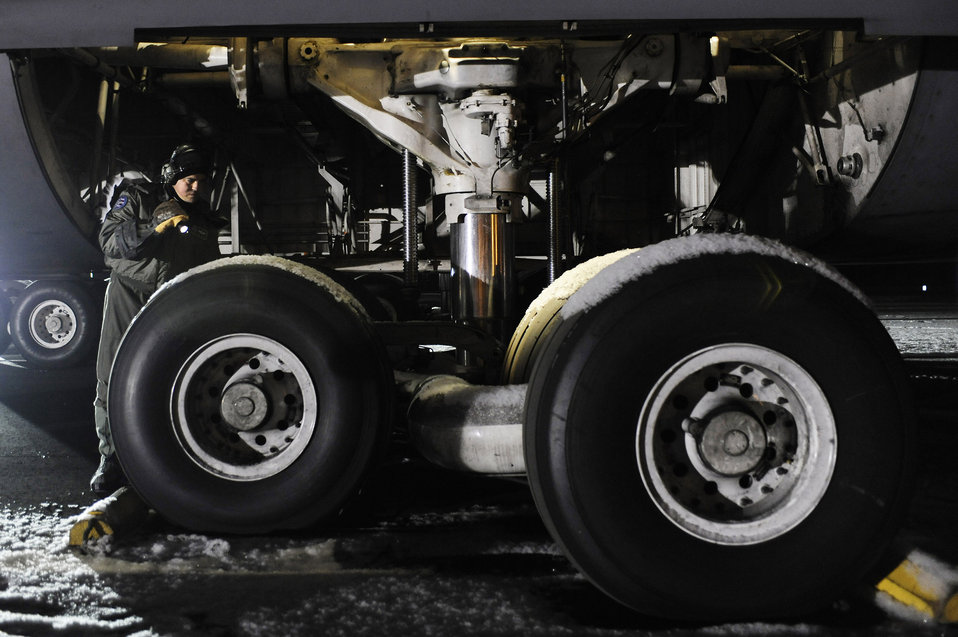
Super Galaxy endures super cold weather

Master Sgt. Jorge Orama checks for leaks on a C-5M Super Galaxy's landing gear after a cold weather test Dec. 14 at Eielson Air Force Base, Alaska. This is the first C-5M with the new CF-6 engines, pylons and auxiliary power units, with upgrades to the aircraft's skin and frame, flight controls, landing gear and the pressurization system that went through cold weather testing. Sergeant Orama is assigned to the Air Mobility Command Test and Evaluation Squadron Det. 1 at Edwards AFB, Calif.